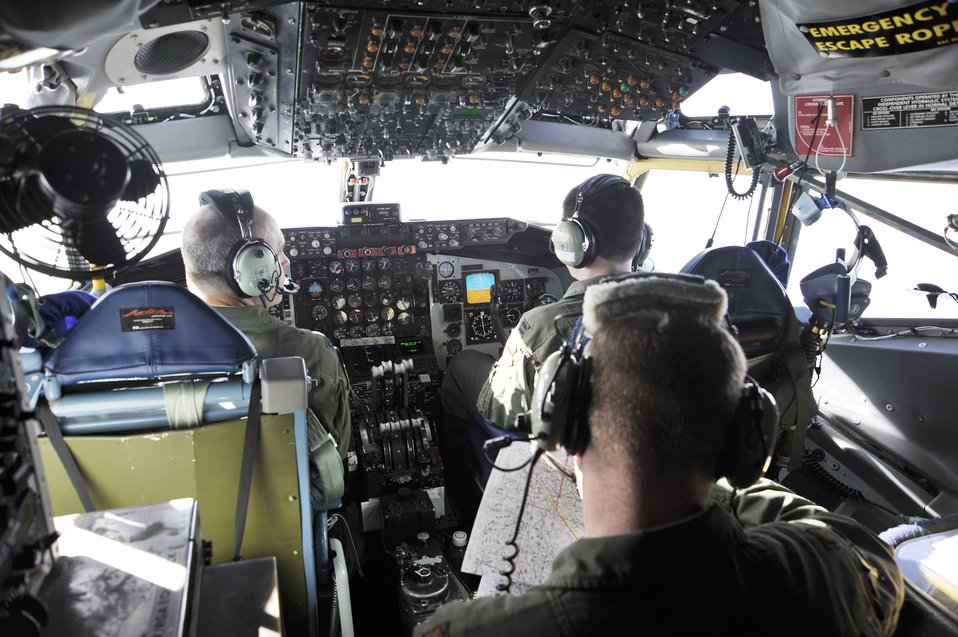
OC-135 crews assist from 15,000 feet

Pilots with the 45th Reconnaissance Squadron from Offutt Air Force Base, Neb., fly an OC-135 Open Skies aircraft Jan. 16, 2010, over Haiti. Army, Navy and Air Force servicemembers used the capabilities of the OC-135B to photograph Haiti to get a better understanding of the devastation.